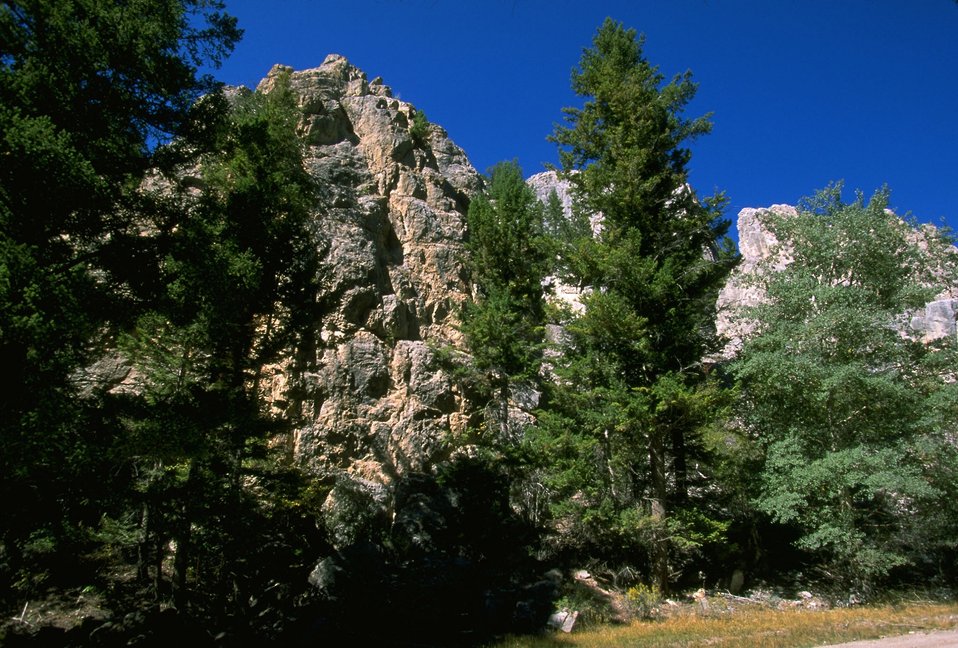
Rattler Gulch-Limestone Cliffs ACEC